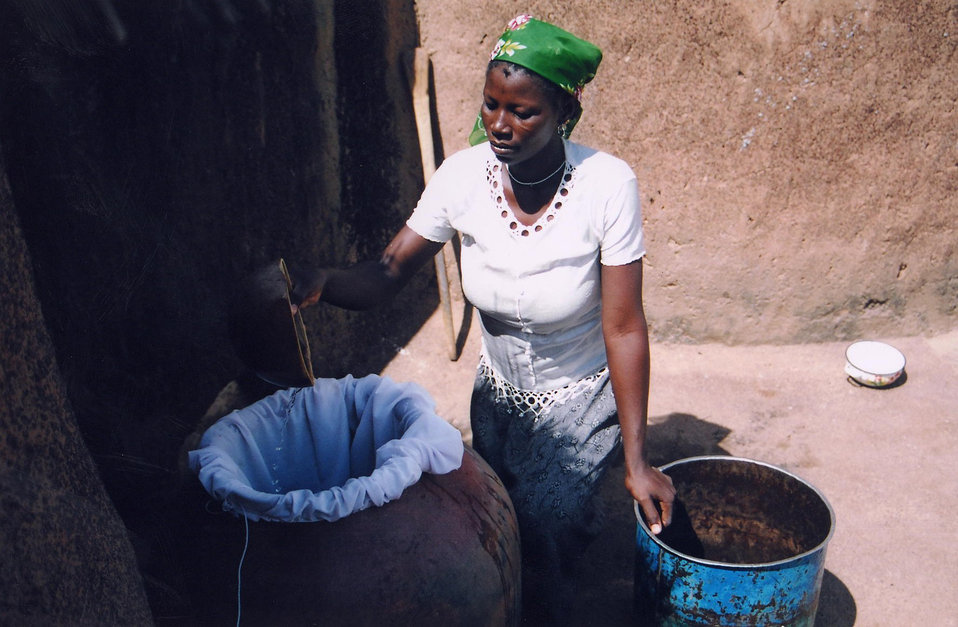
This image depicts Damou Akou, a Ghanaian Red Cross Guinea worm volunteer, as she teaches others how to filter water collected from a near by Guinea worm-infested water source, by using a filter cloth. Household filters are provided by The Carter Center as part of its Guinea Worm, Dracunculus medinensis, Eradication Program. Guinea worm disease (GWD) is contracted when stagnant water contaminated with microscopic copepods, or 'water fleas', carrying infective larvae is consumed. If a person always filters the drinking water through a cloth filter, as the one pictured here, thereby, removing the copepods from the potable water supply, he or she can avoid being infected by the disease.